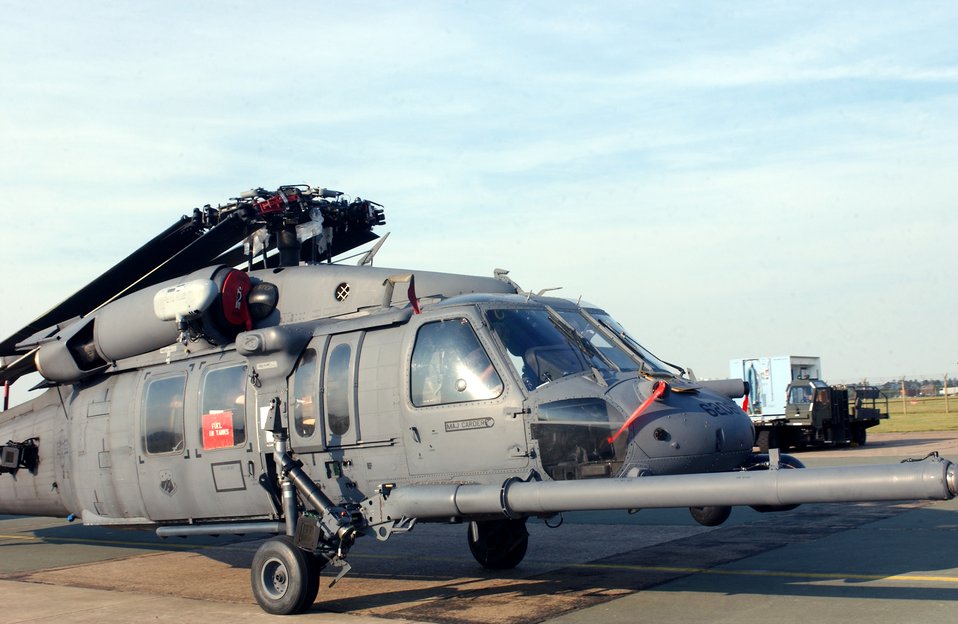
RAF Lakenheath welcomes new mission, aircraft

A HH-60G Pave Hawk helicopter is unloaded from a C-17 Globemaster III at Royal Air Force Lakenheath, England, on Monday, June 12. The helicopter is with the 56th Rescue Squadron being re-assigned here from Naval Air Station, Keflavik.